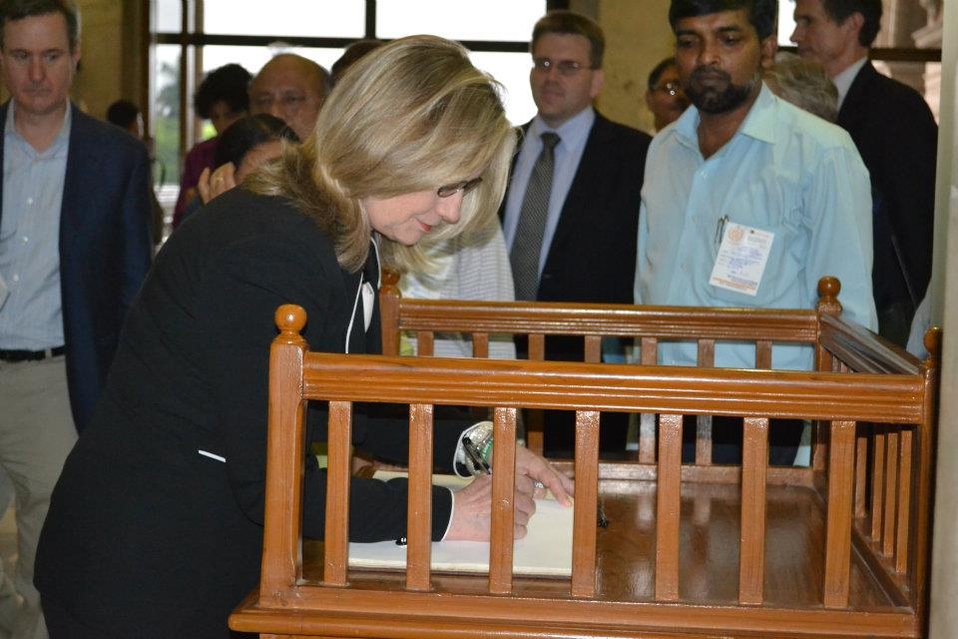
Secretary Clinton Signs the Guestbook

U.S. Secretary of State Hillary Rodham Clinton signs the guestbook at the Victoria Memorial Hall in Kolkata, India, on May 6, 2012.